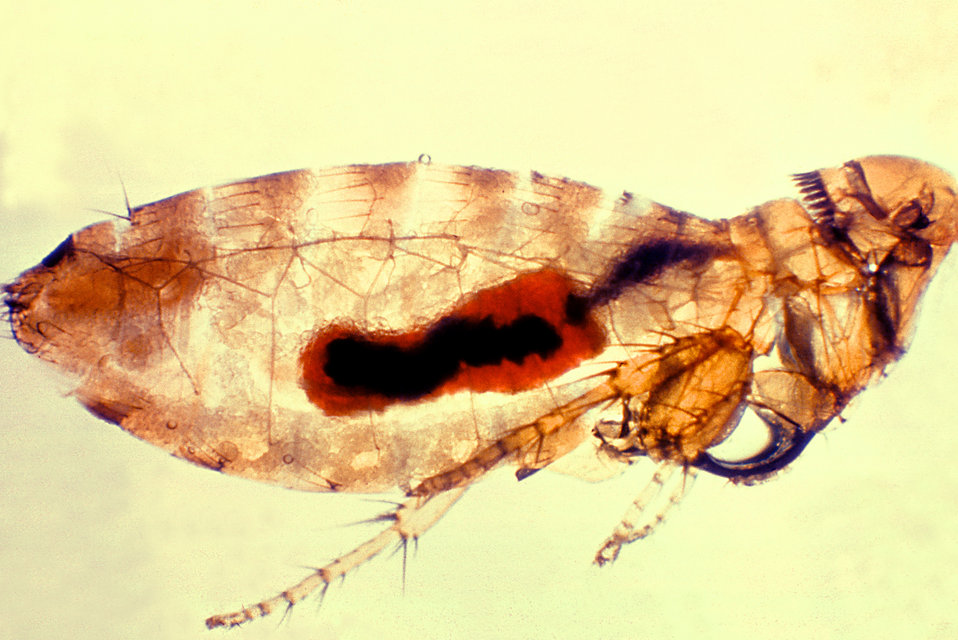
Thrassis bacci johnsoni 38 days after being infected with Pasteurella (Yersinia) pestis.